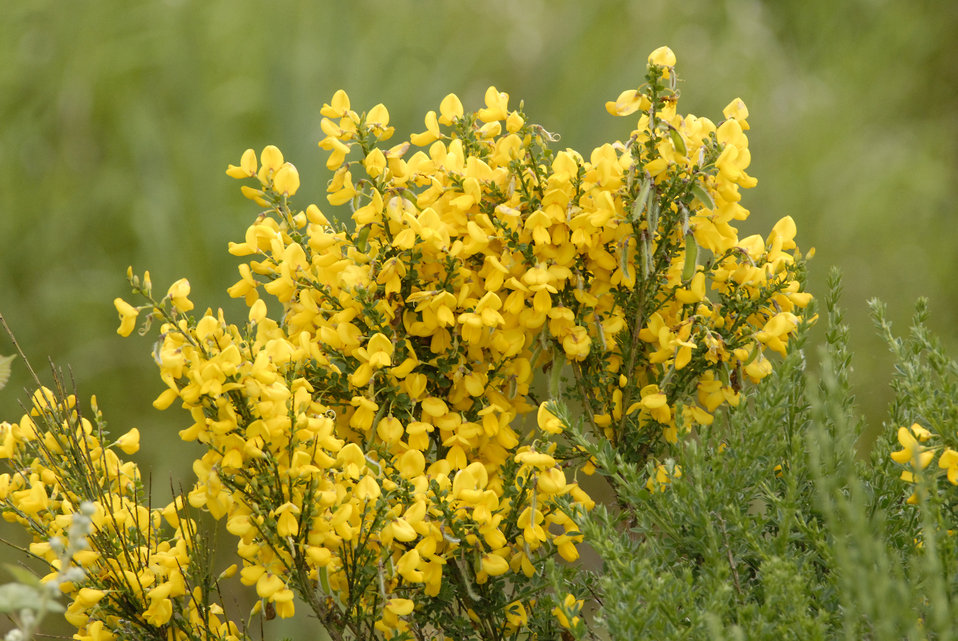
Scotch Broom is an invasive flowering shrub with yellow flowers growing along Oregon’s coastal area near Florence, Oregon on June 10, 2008. This plant was introduced from Europe as an ornamental and for erosion control and it is highly aggressive and forms dense, monotypic stands, which reduce wildlife habitat and hinder revegetation of upland sites and wetland buffers. A species is considered invasive it is nonnative to the ecosystem and its introduction causes or is likely to cause economic or environmental harm or harm to human health. The goal of the U.S. Department of Agriculture’s (USDA) Forest Service (FS) invasive species program is to reduce, minimize, or eliminate the potential for introduction, establishment, spread, and impact of invasive species across all landscapes and ownerships.